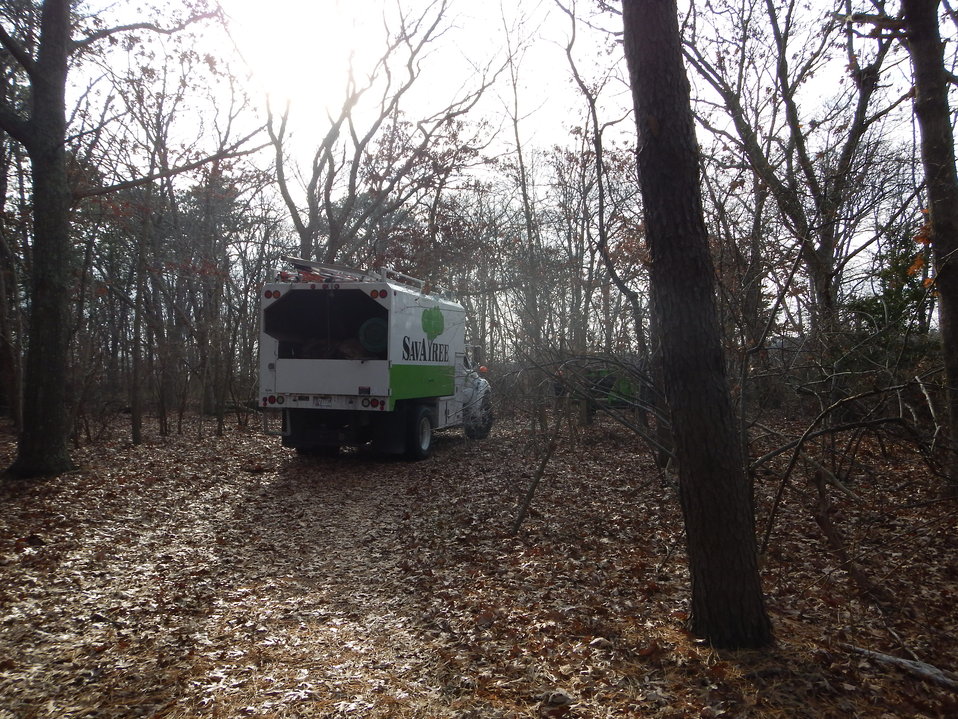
Tree removal at Wertheim National Wildlife Refuge

Clean-up of Hurricane Sandy damage.